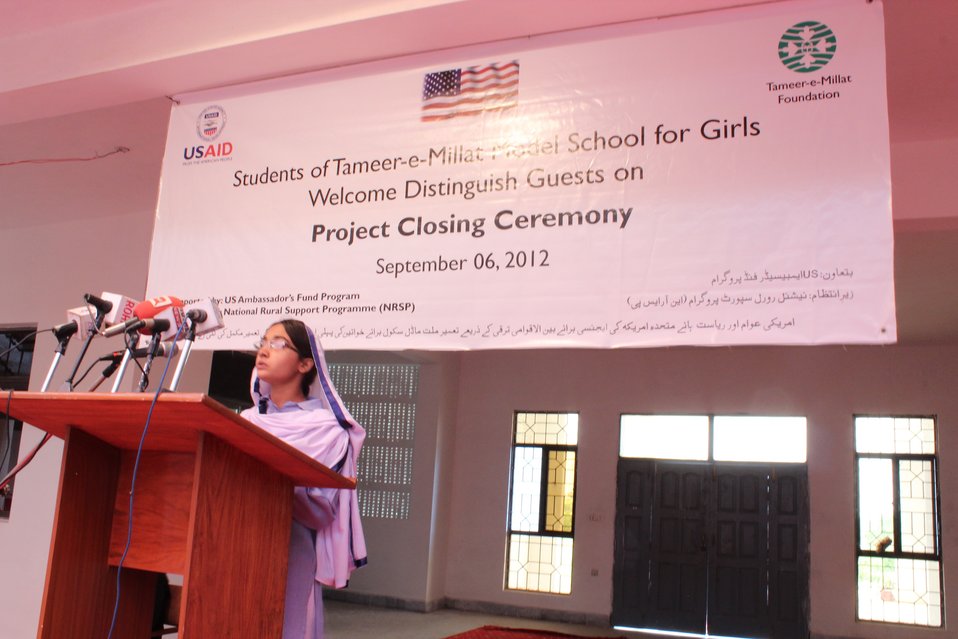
A student addresses the attendees

Sept 06, 2012 : Construction (first and second floor) of Tameer-e-Millat Model School for Girls (TMMSG) in village Latwal, of Tehsil Fateh Jhang has been completed and on Sept 06, 2012 Project closing and School opening ceremony was held in which students, teachers, parents and community leaders participated.